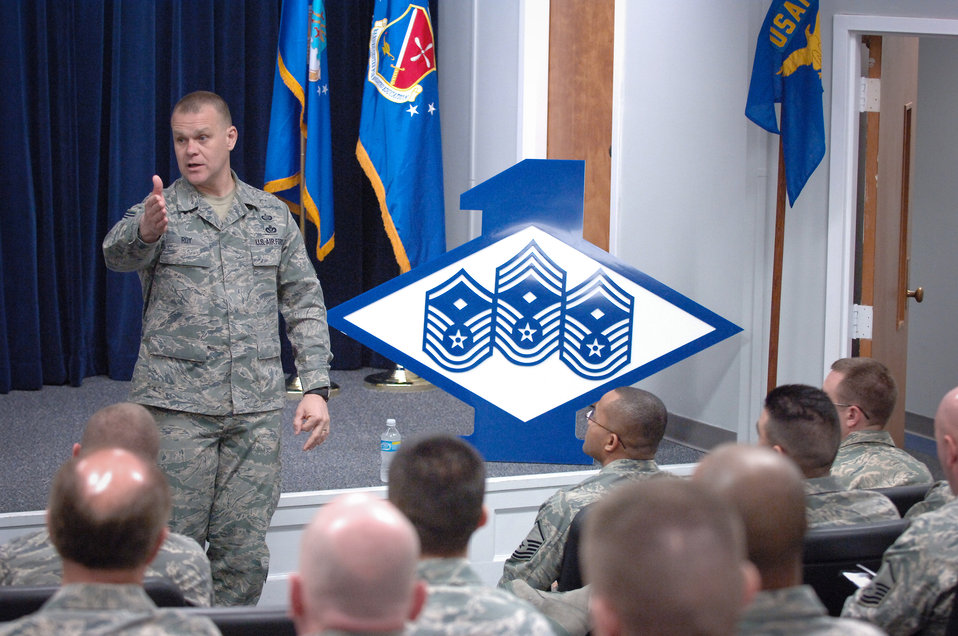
Top enlisted Airman visits Maxwell-Gunter members

Chief Master Sgt. of the Air Force James A. Roy speaks to the staff, faculty and students of the Air Force First Sergeants Academy during his visit Feb. 23, 2010, to Maxwell-Gunter Air Force Base, Ala.